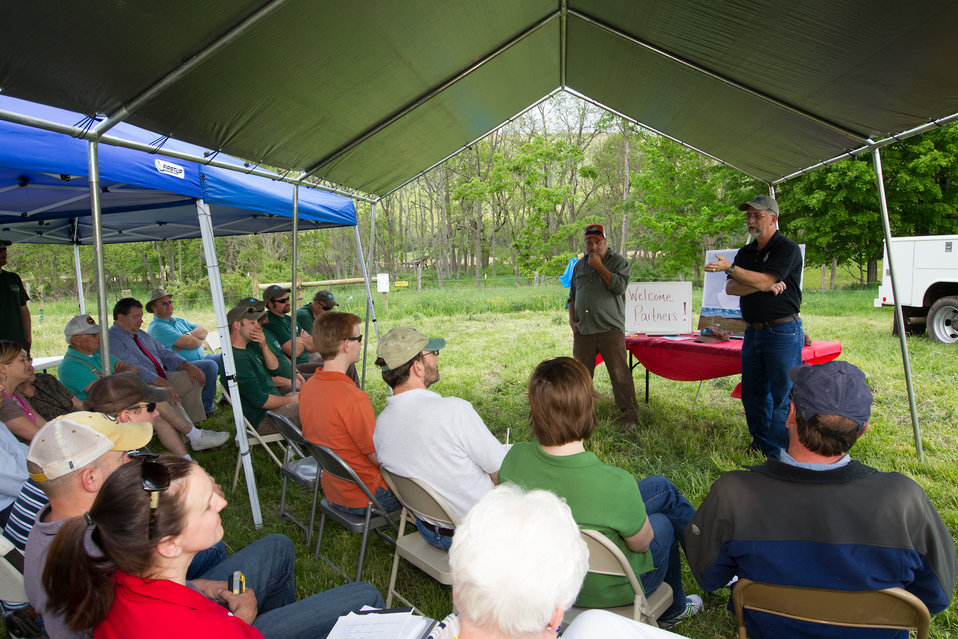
Celebrating 1 Million Feet of Conservation Fence in WV

Partners for Fish and Wildlife Program